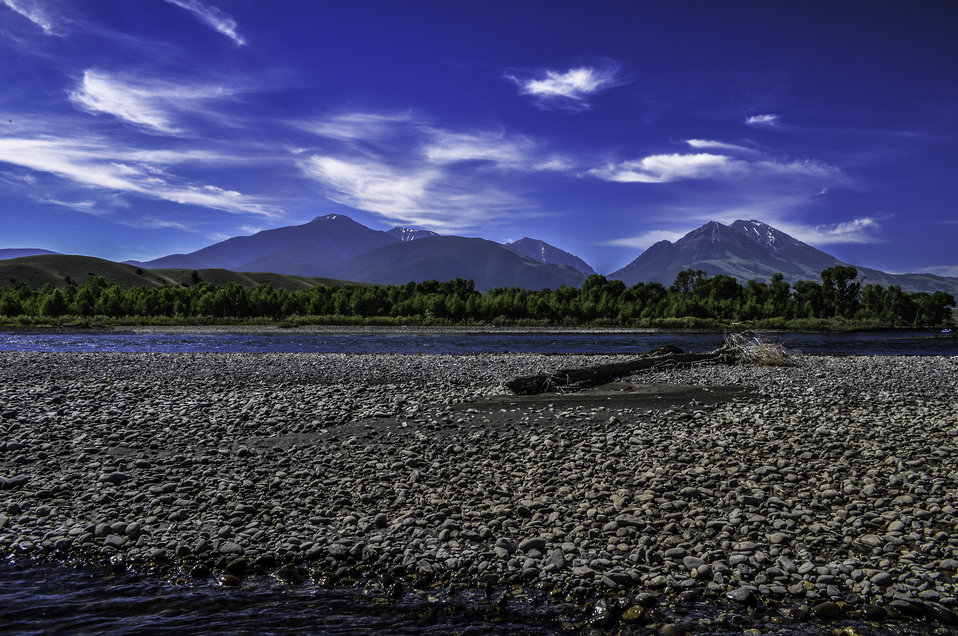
Yellowstone River

The Mighty Yellowstone River on a Beautiful Spring Day in Big Sky Country.